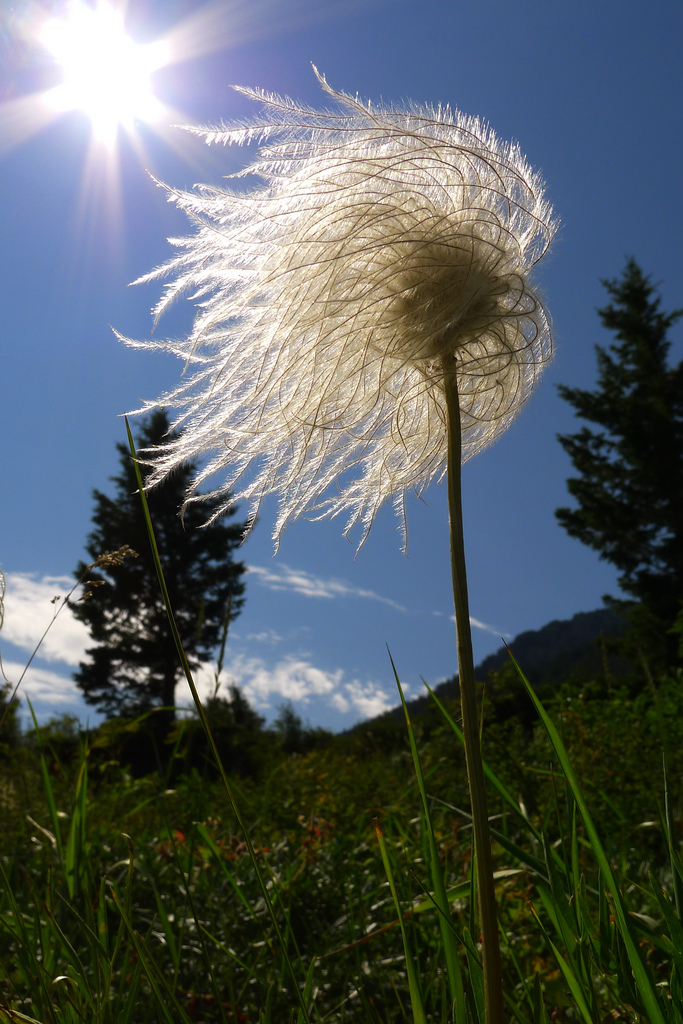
prairie smoke

Red Rock Lakes National Wildlife Refuge, MT